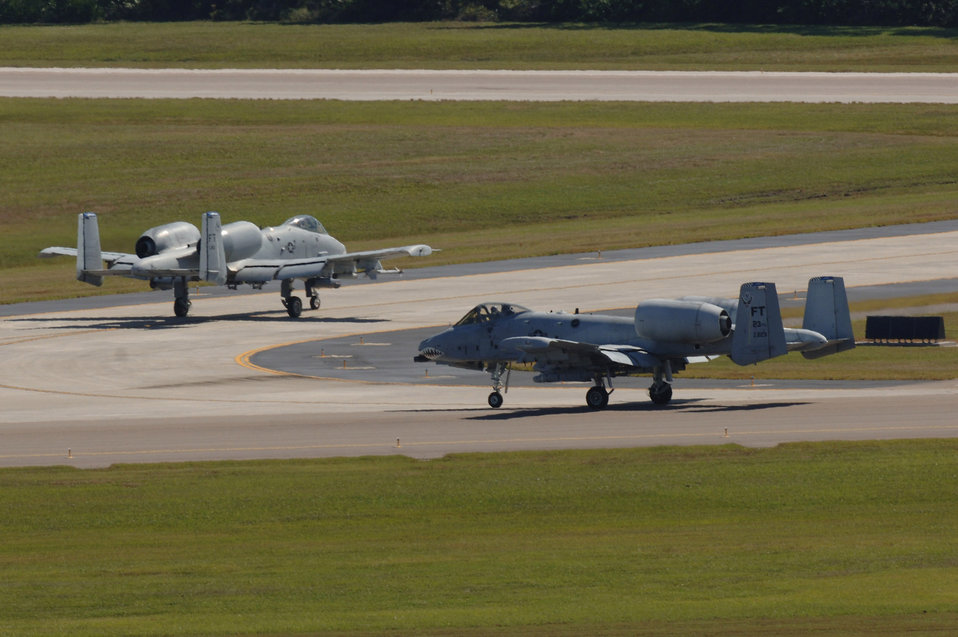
Crews sharpen skills at Atlantic Strike

Two A-10 Thunderbolt IIs return to the aircraft parking area at MacDill Air Force Base, Fla., after flying an Atlantic Strike exercise mission Oct. 24. The fighters, from the 23rd Fighter Group at Pope AFB, N.C., were at MacDill for the U.S. Central Command bi-annual Atlantic Strike training event. Through realistic close-air support training, Atlantic Strike is designed to better prepare aircrews and Air Force joint tactical air controllers for deployments.